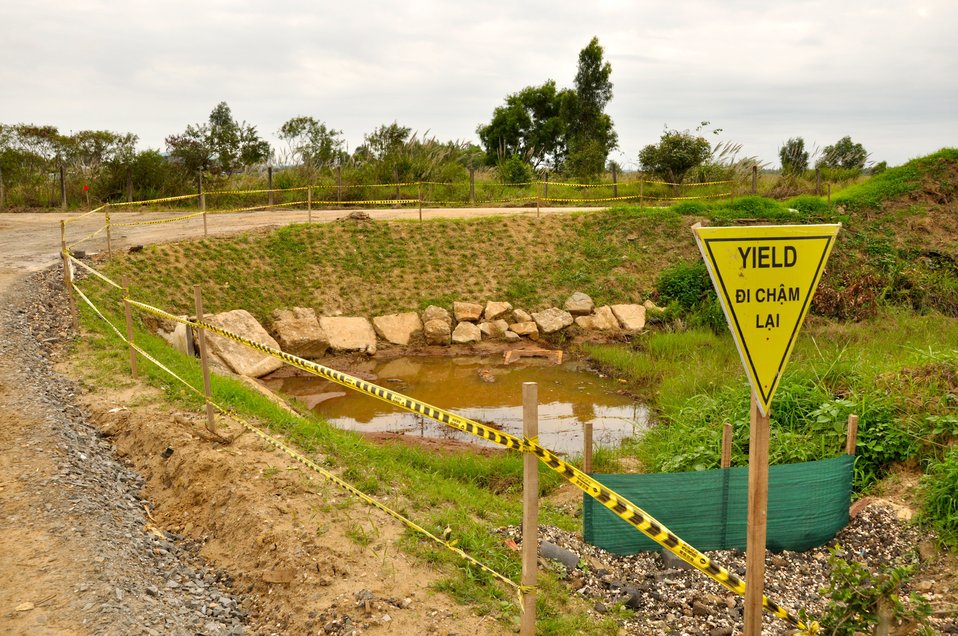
Site Preparation for Environmental Remediation of Dioxin Contamination at Danang Airport

Danang AirporDanang Airport, January 22, 2013

Photo: Richard Nyberg @USAIDVietnam
t, January 22, 2013